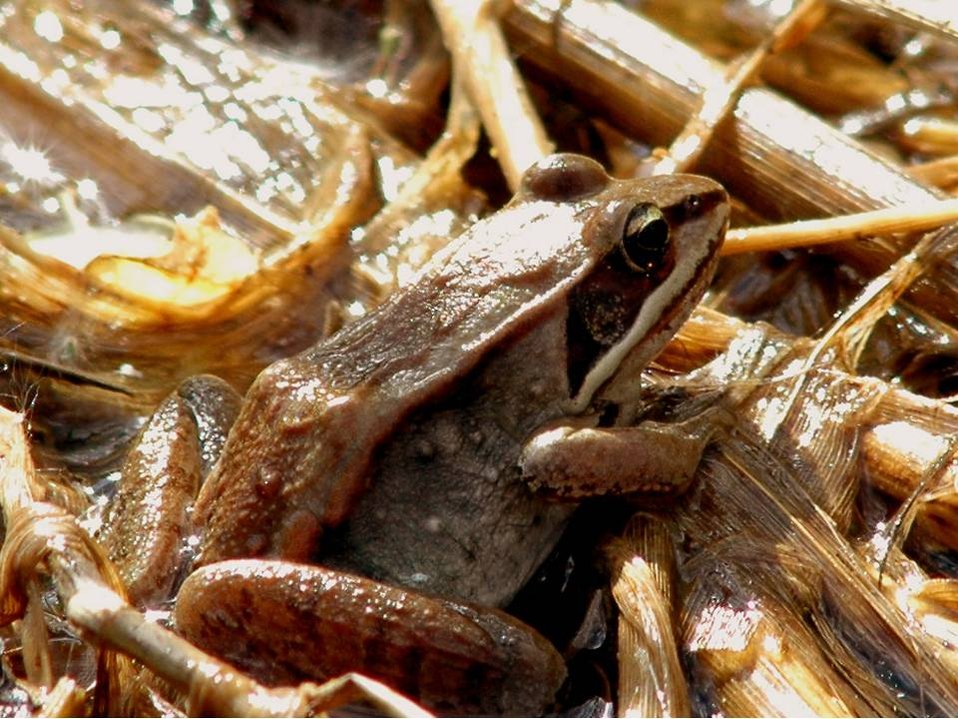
Wood frog takes a rest in a Minnesota wetland.